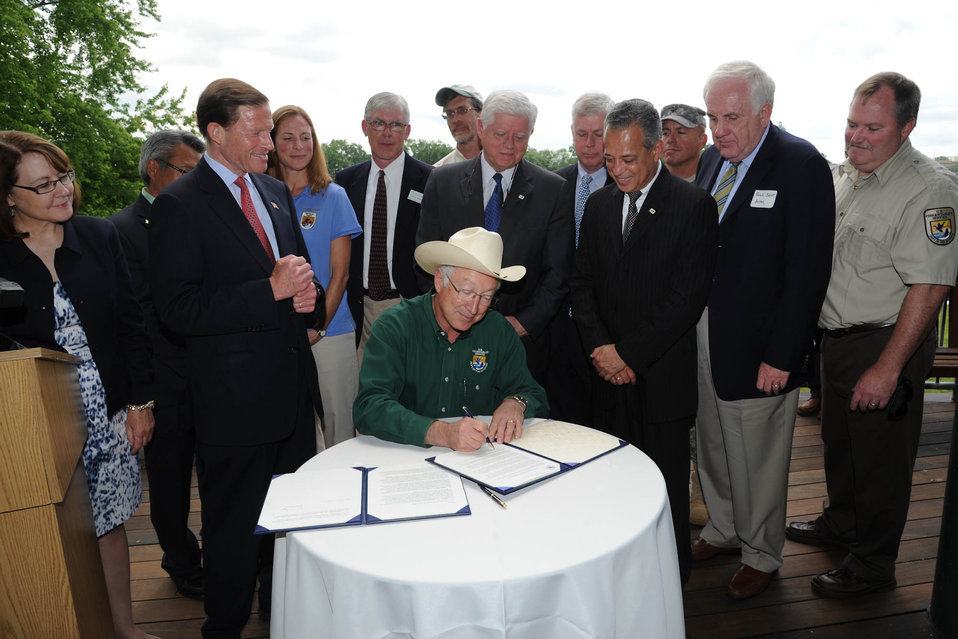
Sign Ceremony

Secretary of the Interior Ken Salazar signs National Blueway designation for the Connecticut River. The U.S. Fish & Wildlife Service Silvio O. Conte National Fish & Wildlife Refuge spans the length of the river (410 miles).
The Connecticut River is the first in the nation to be designated a Blueway.